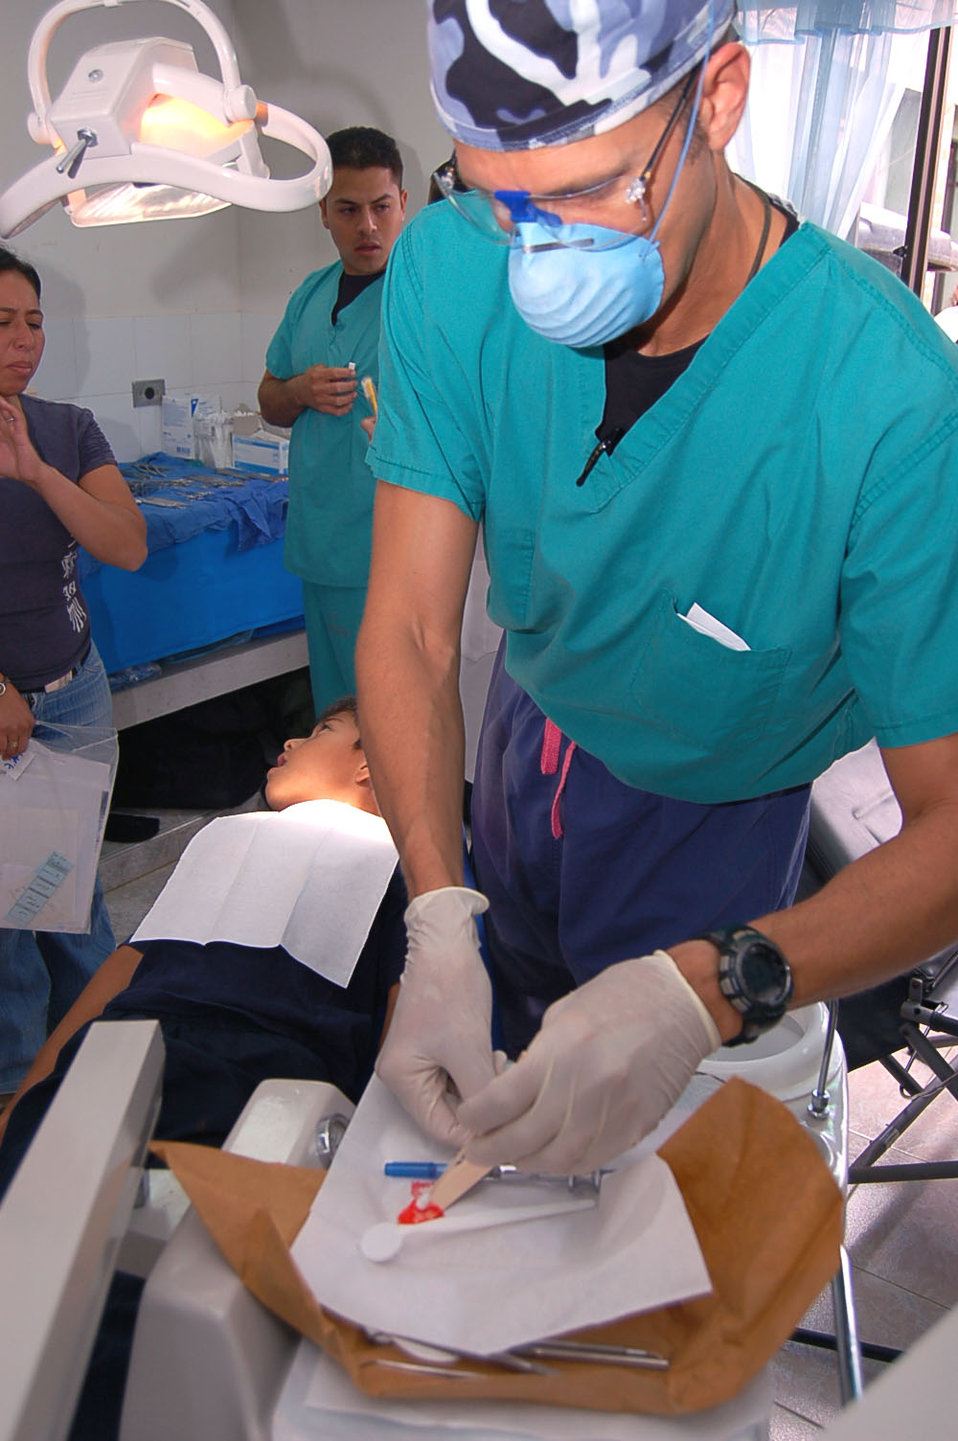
Airmen provide medical assistance in Colombia

Lt. Col. (Dr.) Gary Geracci prepares to remove a decayed tooth from the mouth of a Colombian boy at the Hospital Toribo Maya in Popayan, Colombia, Sept. 12. The colonel is one of 14 members of a medical team sent to Colombia to participate in a medical readiness training exercise. He is an oral surgeon assigned to the 55th Medical Group at Offutt Air Force Base, Neb.